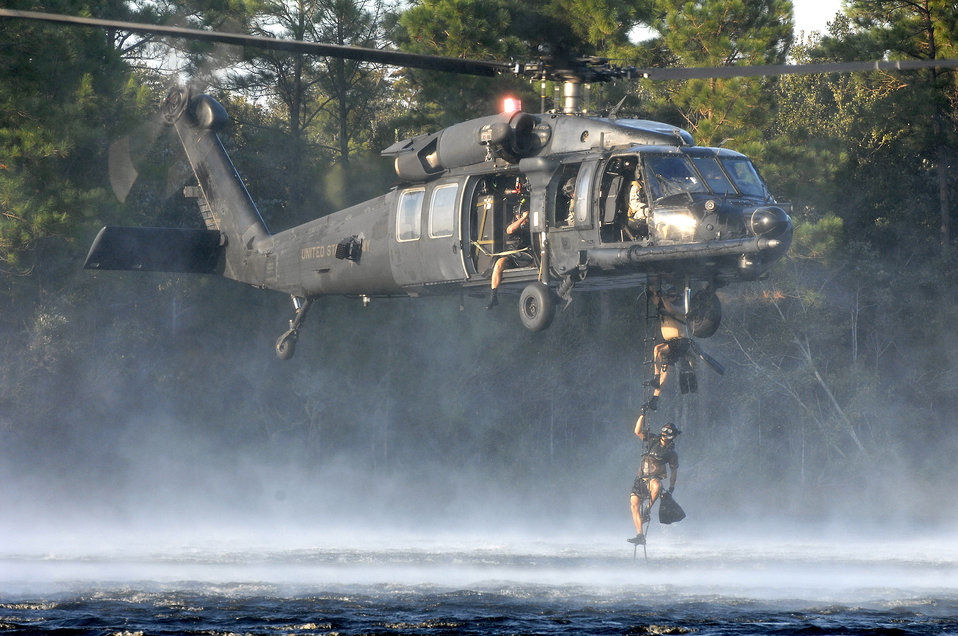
Don't lose your flippers

After completing zodiac deployment training, pararescuemen from the 23rd Special Tactics Squadron climb a ladder into a U.S. Army MH-60 Blackhawk over Gator Lake, Fla., Oct. 16 near Hurlburt Field. Boarding via the ladder saves critical moments that may be needed in a rescue.